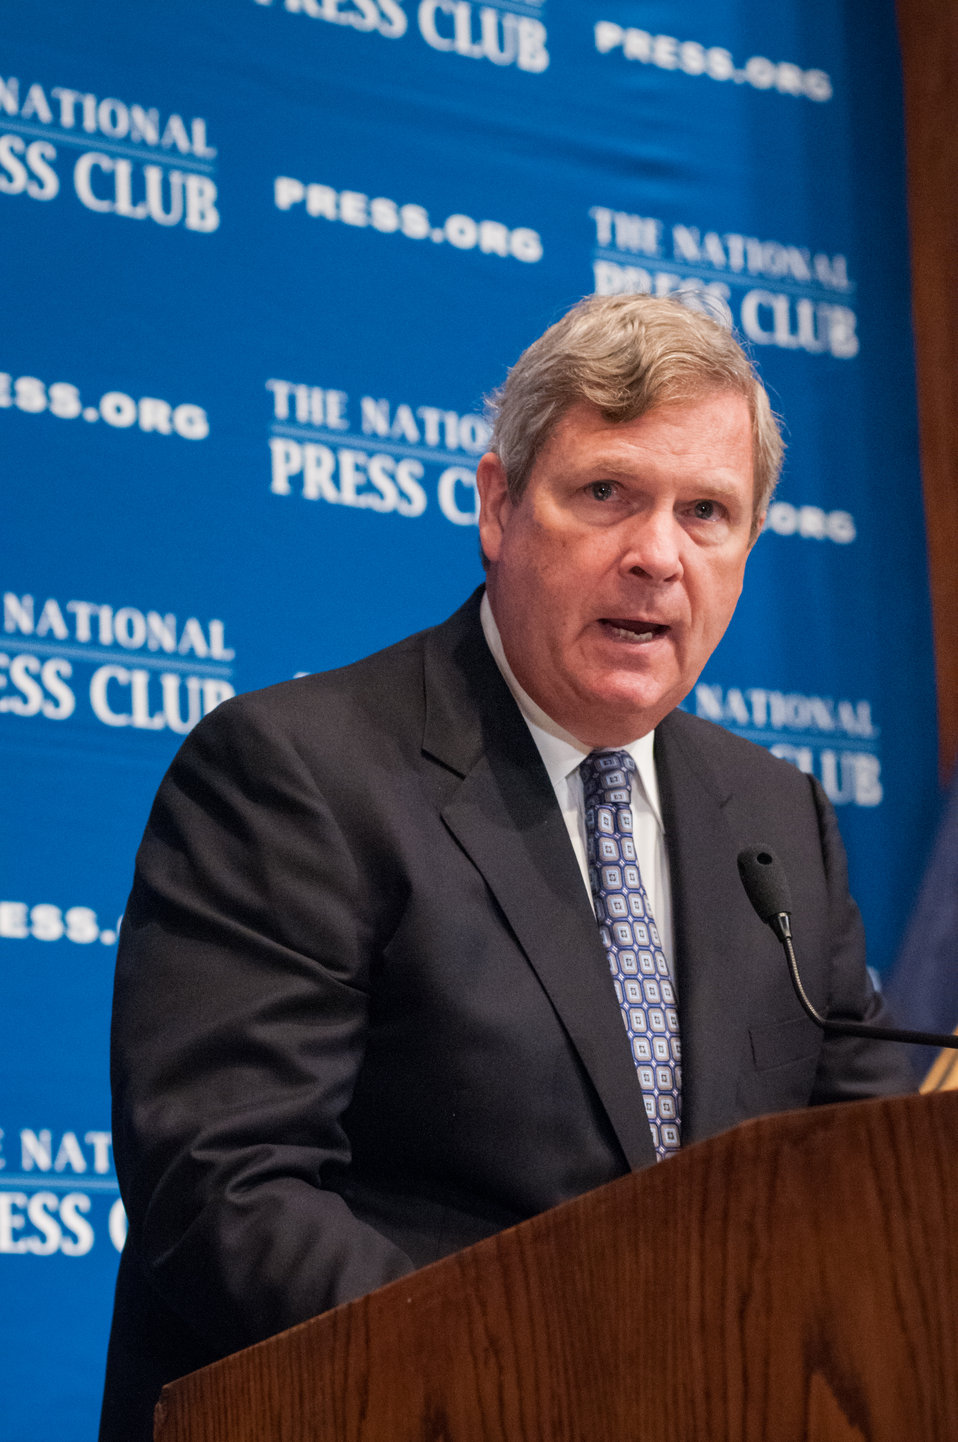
Agriculture Secretary Tom Vilsack discusses the vision for the U.S. Department of Agriculture’s (USDA) future efforts to assist America to adapt to modern environmental challenges at the National Press Club in Washington, D.C. on Wednesday Jun. 5, 2013.